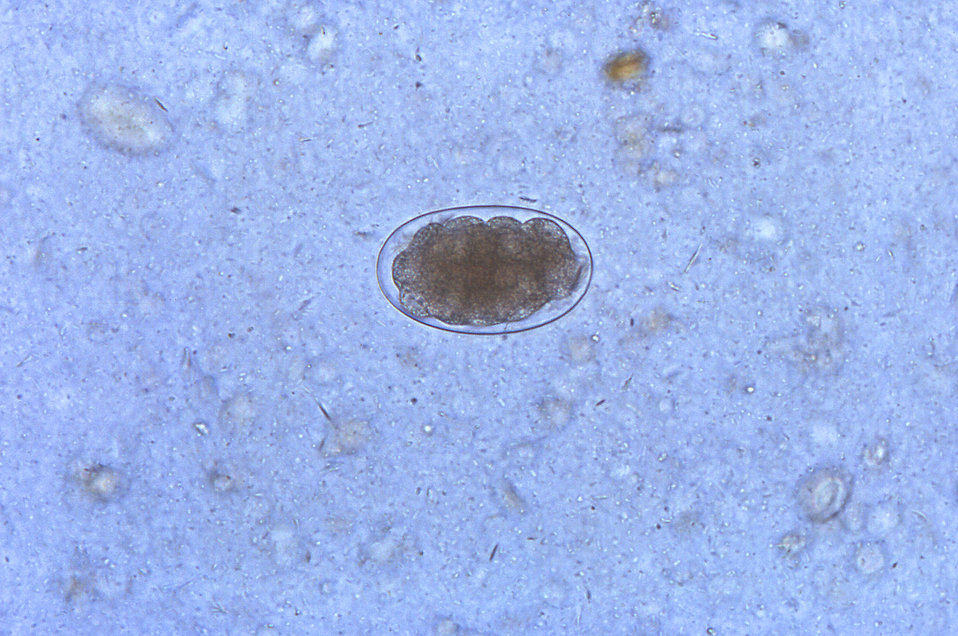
This photomicrograph reveals a hookworm egg undergoing the process of cellular division.